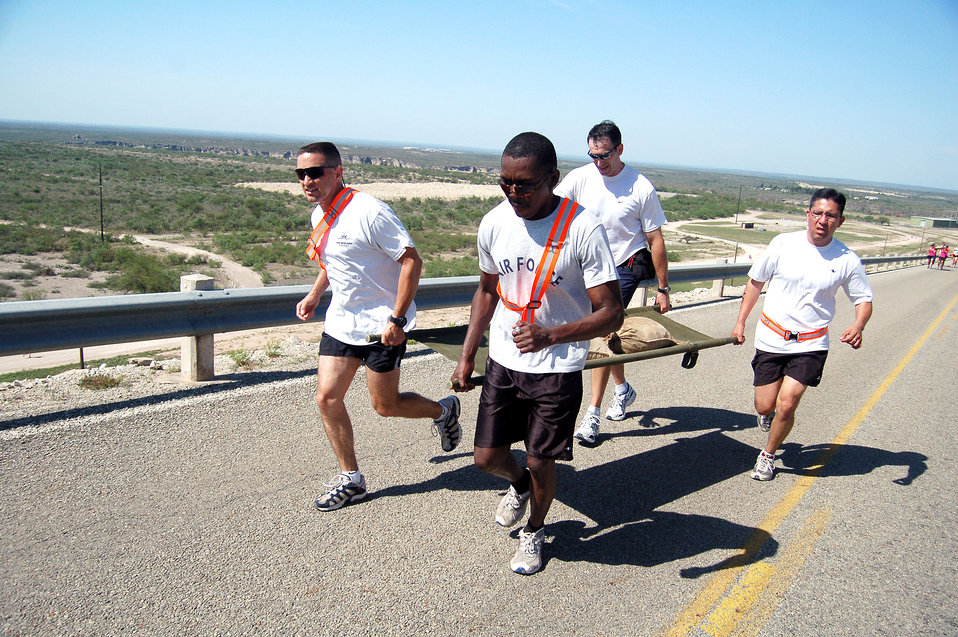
Air Force, Army teams compete in adventure race

From left to right, Maj. Dan Pence, Senior Airman Olufemi Owolabi, Col. Mike Minahan, and Tech. Sgt. Gabriel Valdez compete as relay team 'XL1' in the